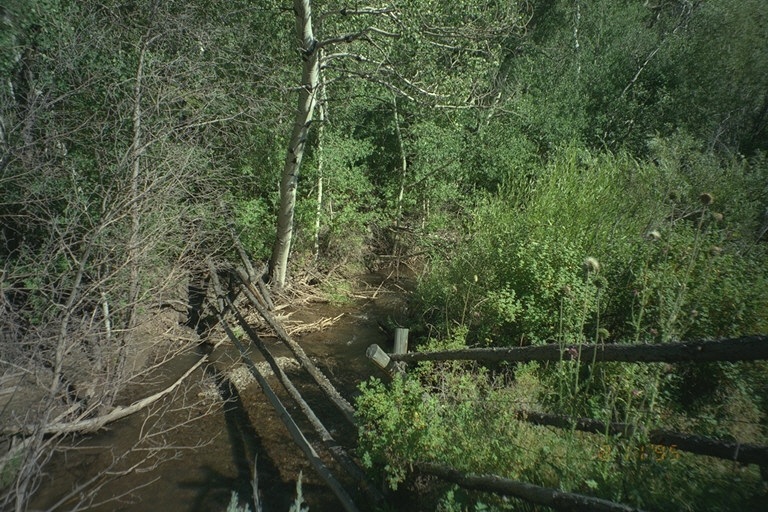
Riparian area Public Lands Salmon Field Office UCSC Upper Columbia Salmon Clearwater District